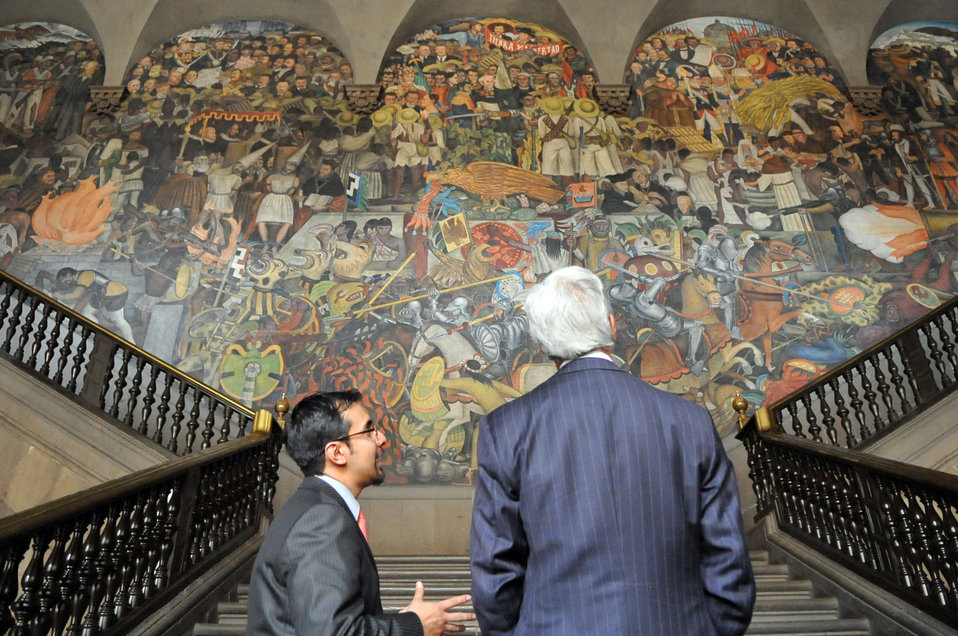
Secretary Kerry Admires Diego Rivera Murals in Mexico City

Guide Rafael Rios Chagolla explains a Diego Rivera mural to U.S. Secretary of State John Kerry as he visited the Palacio Nacional in Mexico City, Mexico on May 21, 2014.